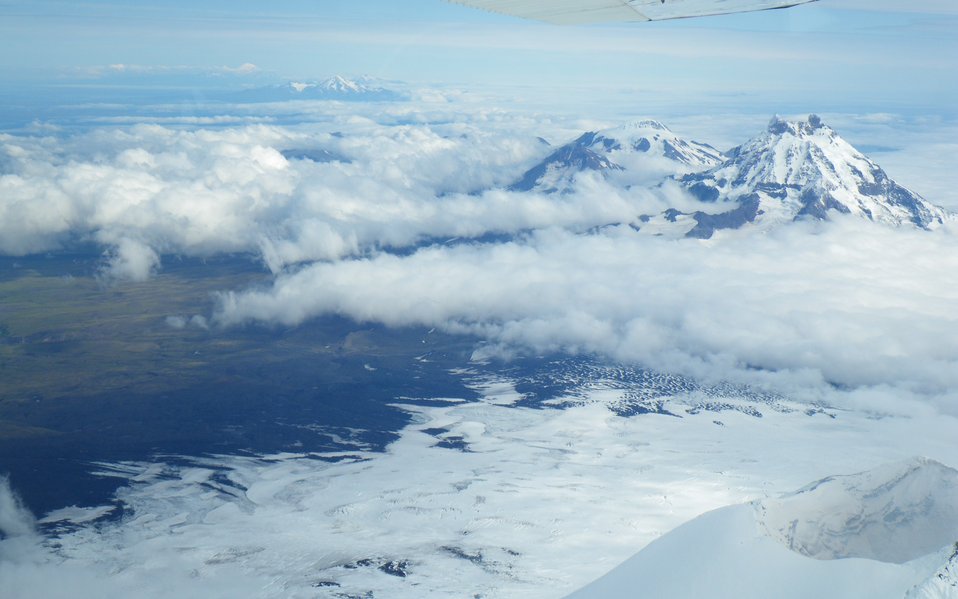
View from Shishaldin Volcano to NE

Unimak Island, Alaska Maritime National Wildlife Refuge